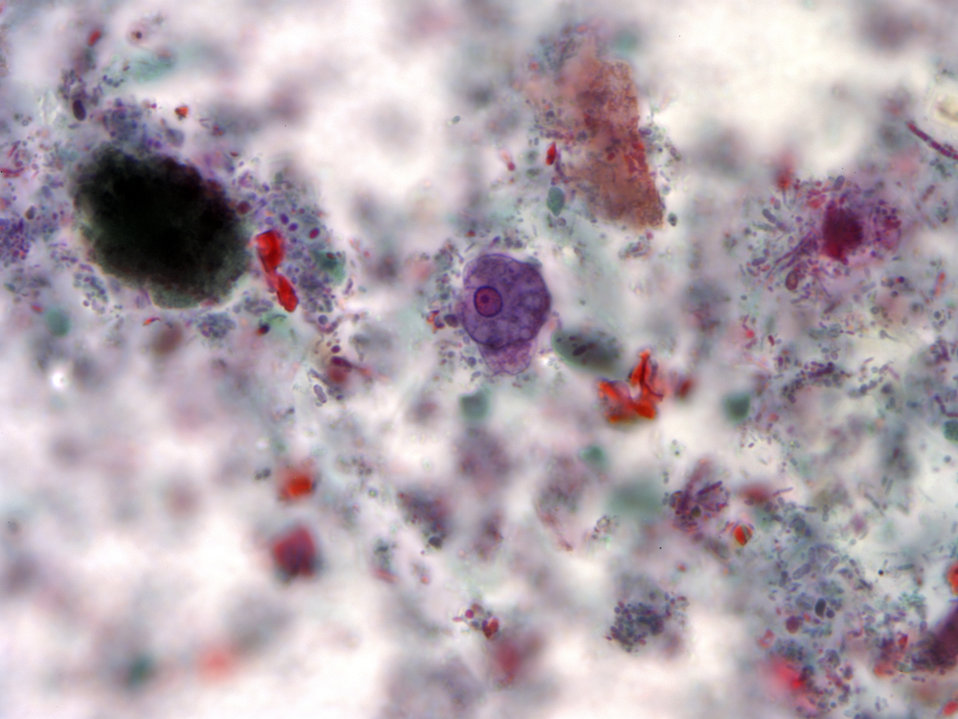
Using a trichrome stain, this photomicrograph depicted a trophozoite of the single-celled parasite, Entamoeba histolytica. Stained purple, the trophozoite, see here in the center of the micrograph, is one of the life cycle phases through which a protozoan organism passes as it matures, and is the active-feeding phase of its growth. The other particulates surrounding the trophozoite represent debris from the slide specimen.